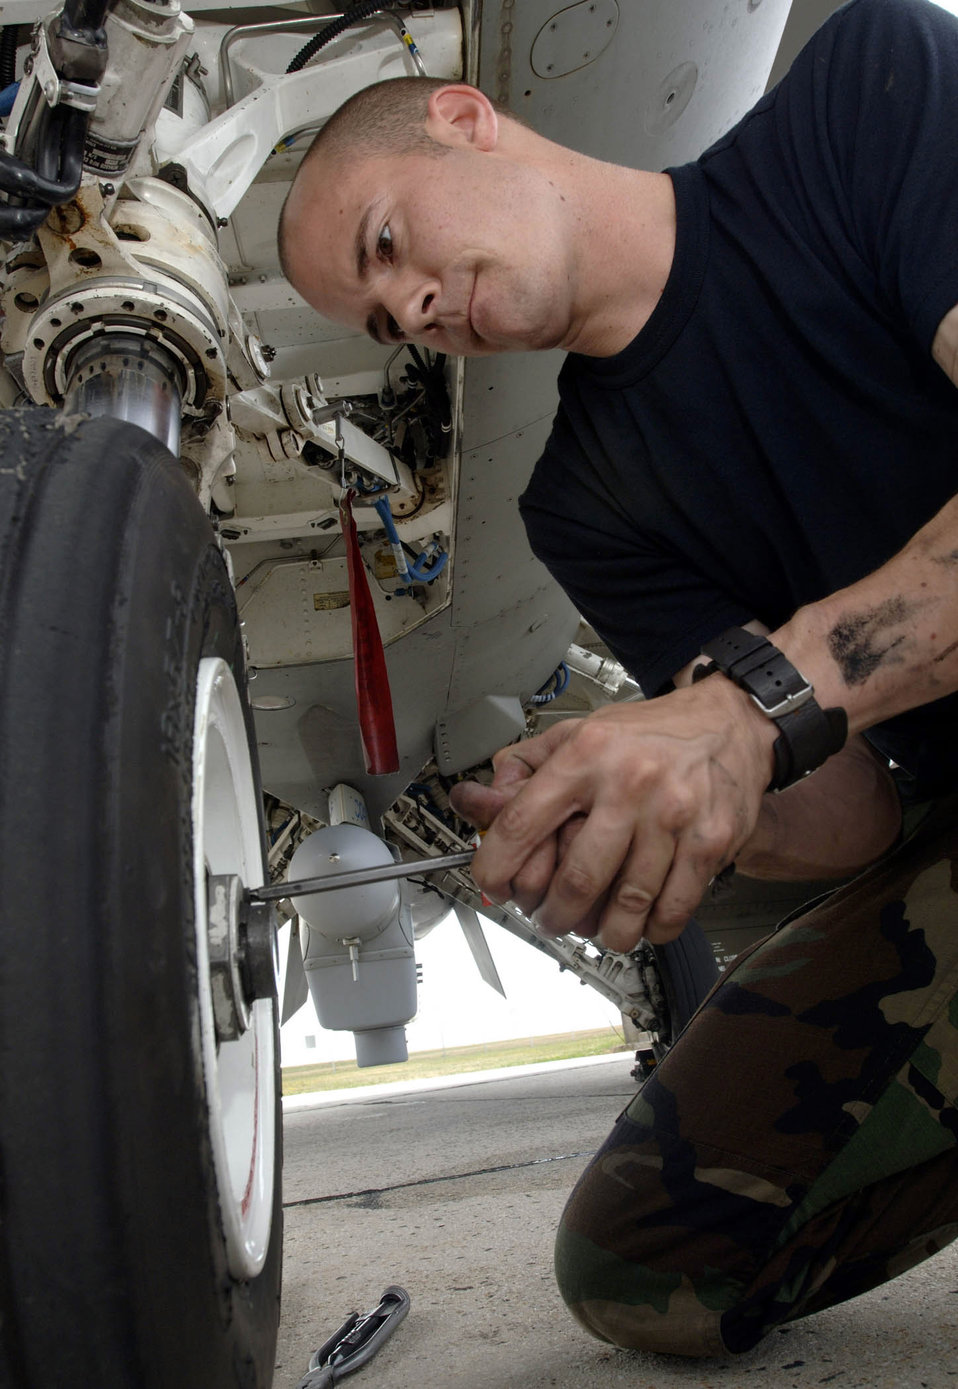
Tire replacement

SPANGDAHLEM AIR BASE, Germany -- Senior Airman Chris Mustard prepares to replace an F-16 Fighting Falcon front wheel. Airman Mustard is assigned to the 23rd Aircraft Maintenance Unit.